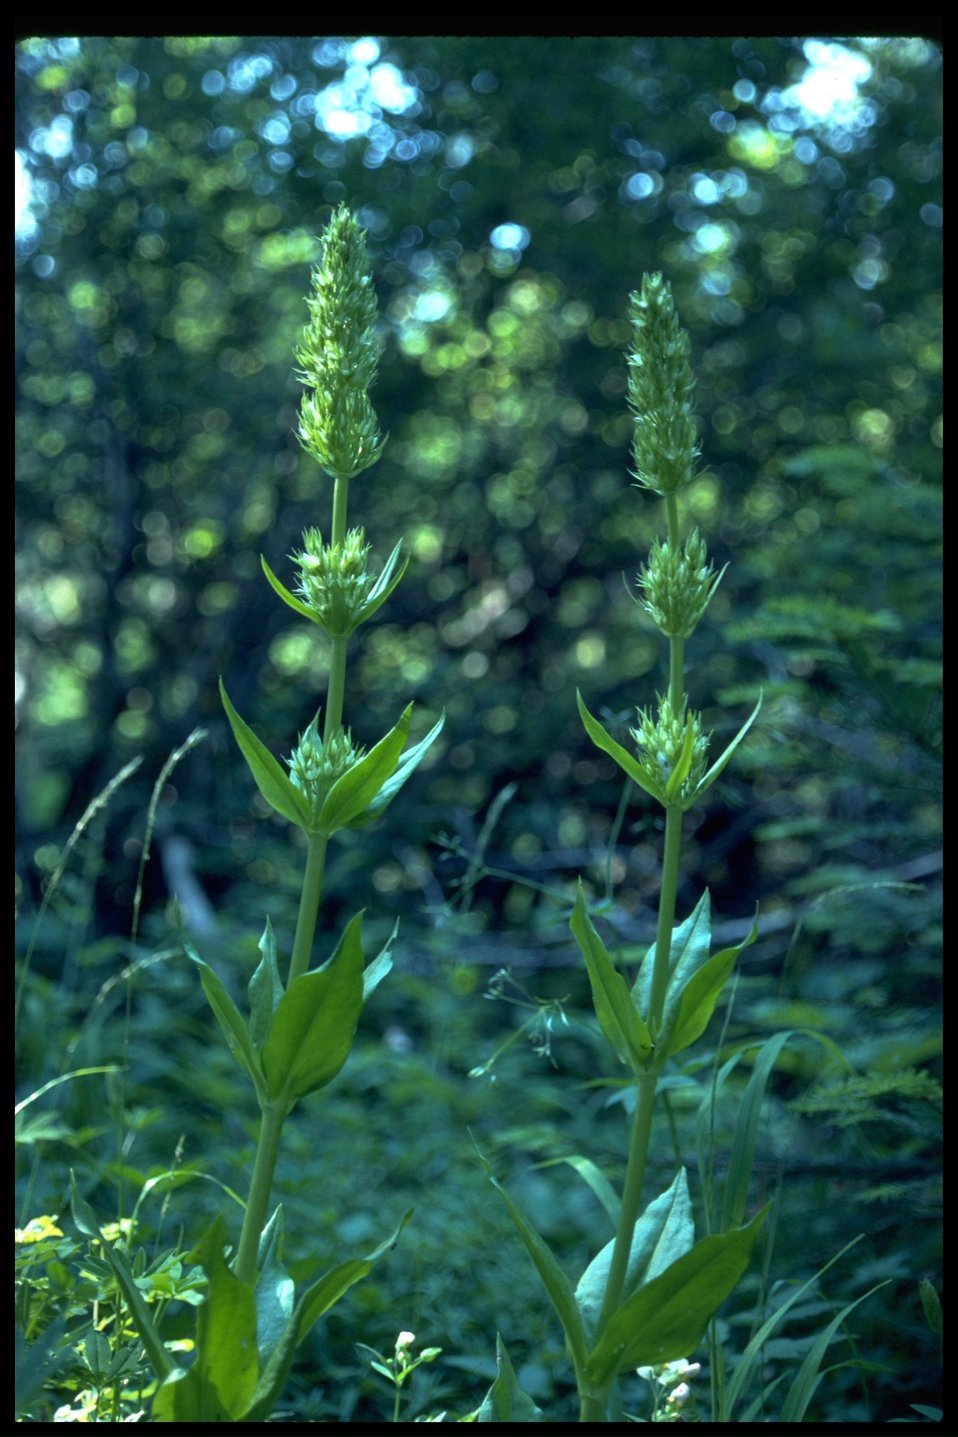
Fransera umpquaensis, commonly known as Umpqua Swertia.